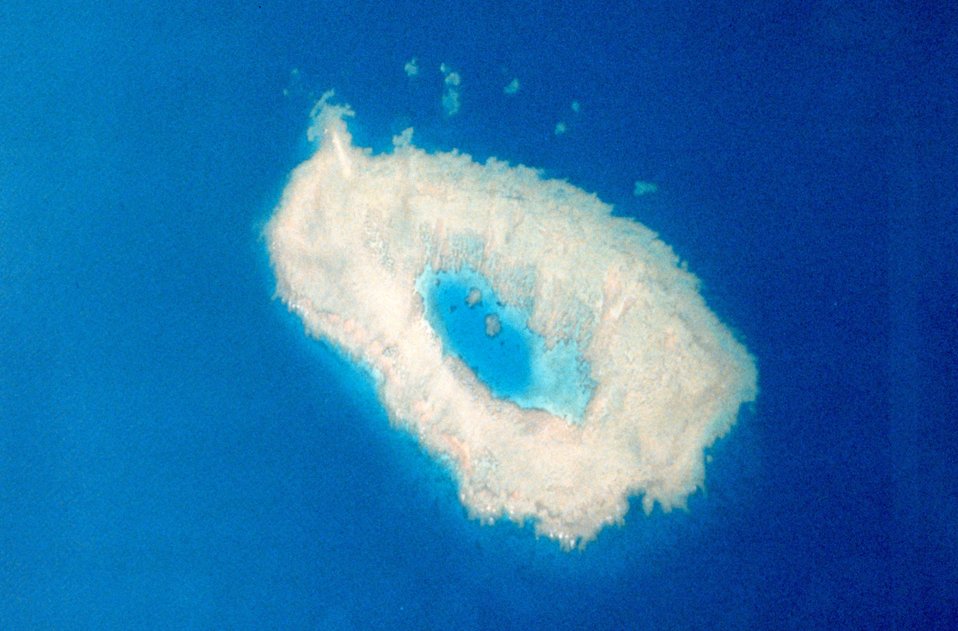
Pacific atoll